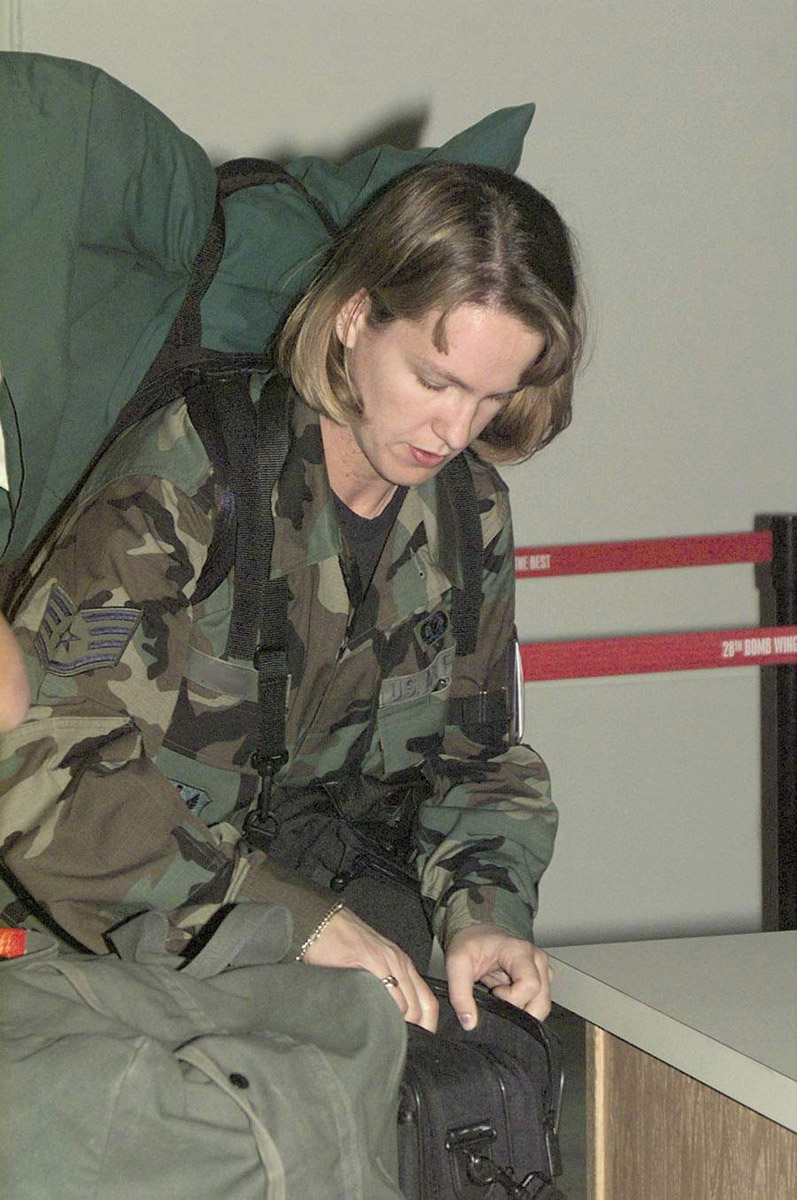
Answering The Call

ELLSWORTH AIR FORCE BASE, S.D. -- An Air Force member checks her mobility bag to ensure she has all the proper gear prior to her deployment from here, Sept. 23, 2001. Military members were deployed worldwide in support of America’s war on terrorism.